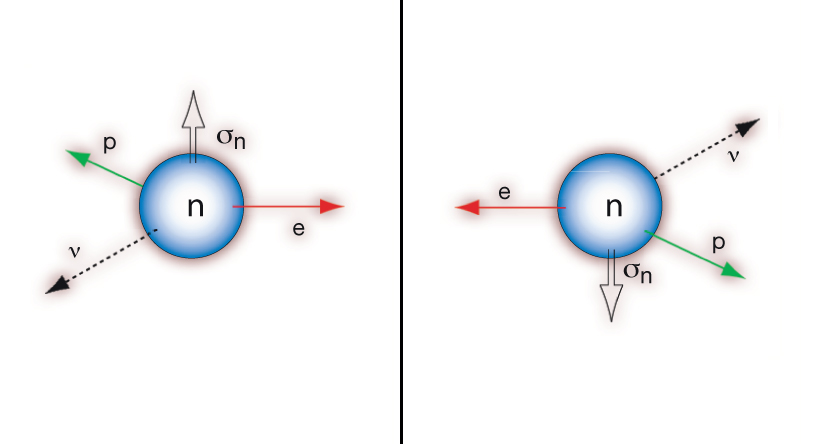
Antimatter

Two types of neutron decay produce a proton, an electron and an electron antineutrino but eject them in different configurations, The experiments at NIST detected no imbalance, but the improved sensitivity could help place limits on competing theories about the matter-antimatter imbalance in the universe.

See also www.nist.gov/ncnr/antimatter-110811.cfm

Credit: emiT team